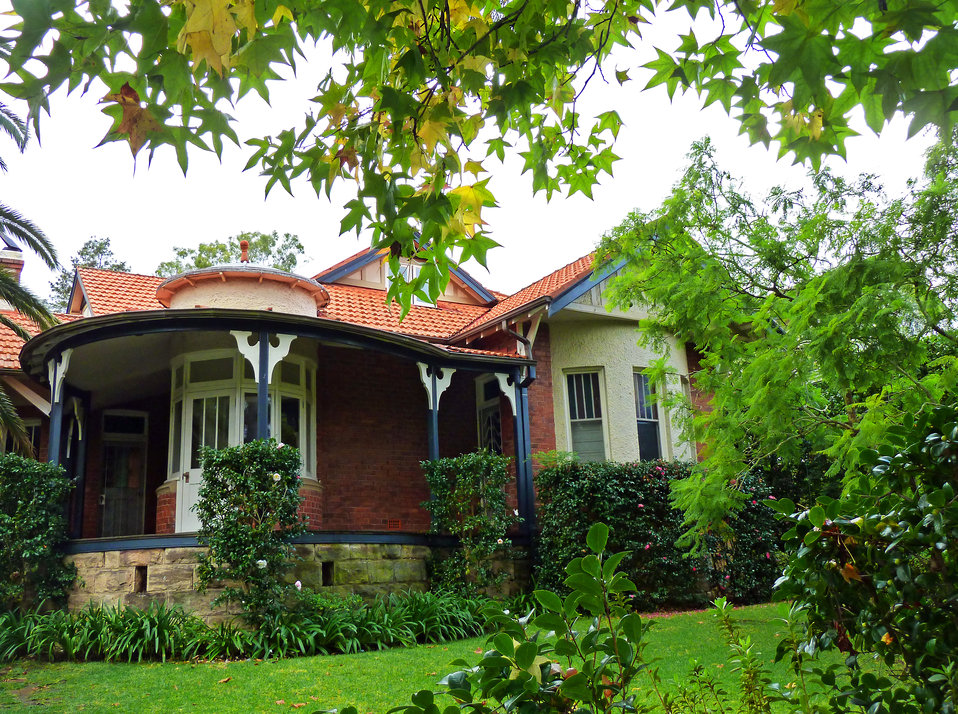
17 Waimea Road, Lindfield, New South Wales, Australia.